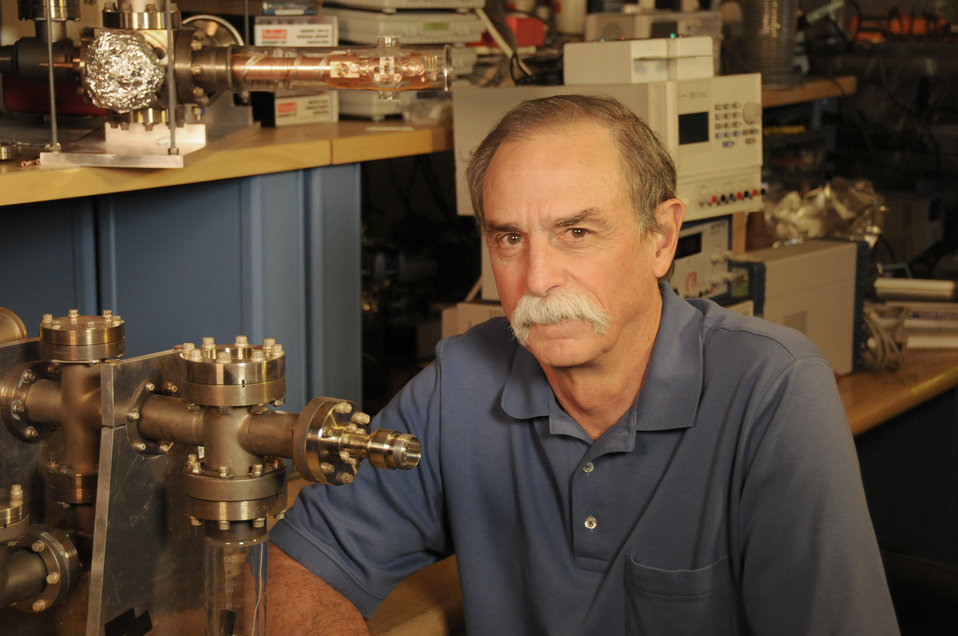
Dr. David Wineland